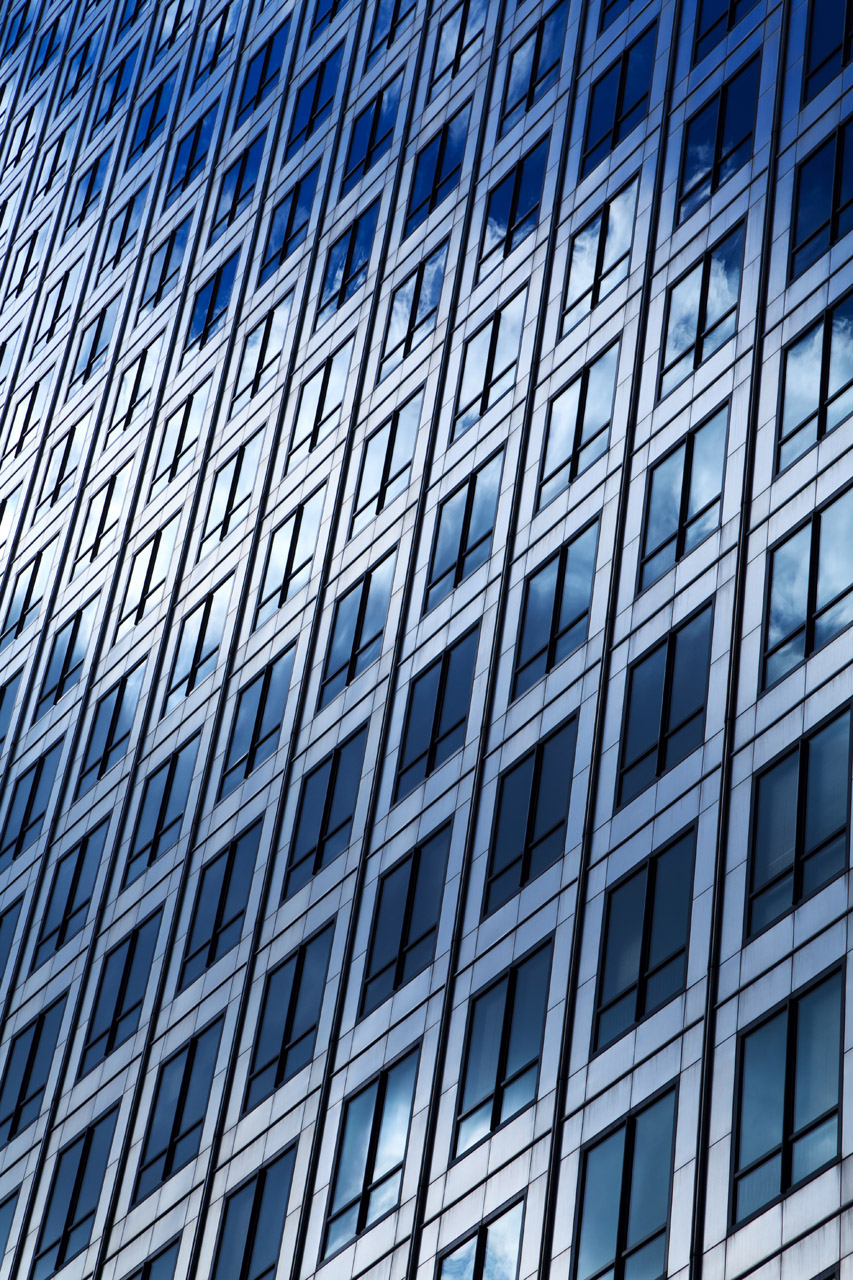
Windows pattern

Blue skyscraper window pattern.